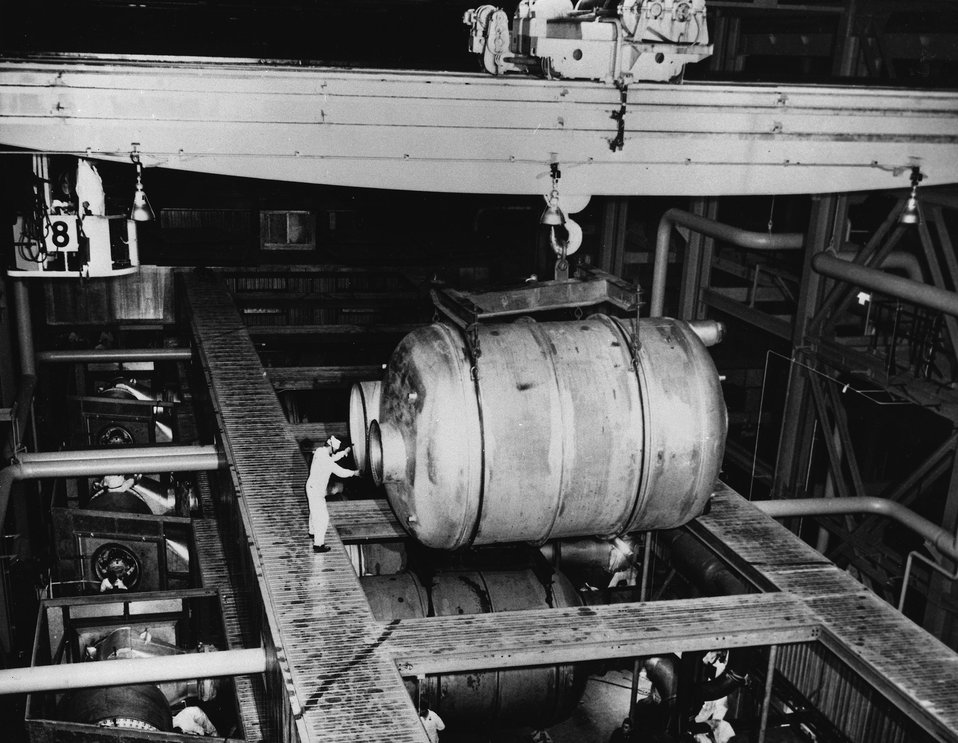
The Process Equipment Modification Project involves improving the components in the existing gaseous diffusion plants. c. 1975